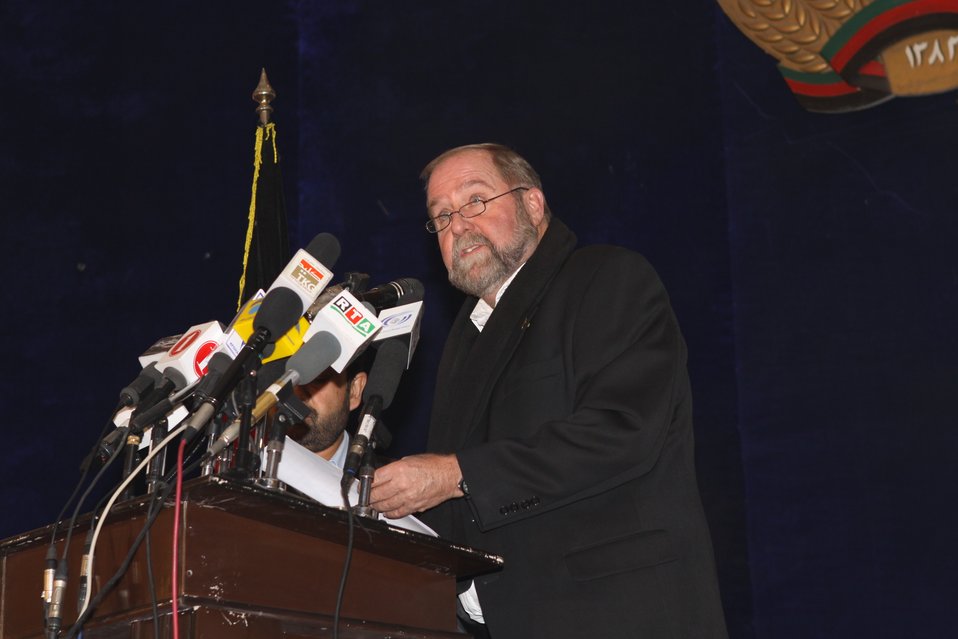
Community Health Workers Celebrated

Kabul, Afghanistan | December 5, 2010 — In support of the United Nations designated International Volunteer Day for Economic and Social Development, Afghanistan’s Ministry of Public Health celebrated its annual Community Health Worker Day today. Acting Minister of Public Health Dr. Suraya Dalil, USAID Senior Deputy Mission Director Robert Hellyer, other government officials, and international donors joined in recognizing the critical contribution of community health workers in Afghanistan and encouraging them to continue their voluntary support to their communities.
The event praised the contributions of the more than 22,000 volunteers throughout the country who deliver community level health-education, counseling, and services out of village health posts located in private homes. The Ministry of Public Health envisioned that community-based healthcare programs will actively encourage communities and families to adopt healthy lifestyles and behaviors, and provide families access to high quality and socially acceptable preventative medicine and life-saving services.
“We have 22,000 community health workers in Afghanistan that are able to implement the basic and standard medicines. They all have been trained through a job description,” said Minister Dalil. Addressing the health workers, she added, “I am proud and feel powerful that I have people like you.”
USAID-funded health projects collaborate closely with the Ministry of Public Health to improve the health and nutritional status of Afghans, provide quality primary healthcare, and promote healthy behaviors at the community and household-levels. USAID supported the training of more than 9,000 of the volunteer community health workers currently working in Afghanistan.
“On behalf of the American people, I congratulate the Community Health Workers for their diligence to gain the skills and knowledge necessary to serve their communities in this important role,” said USAID Senior Deputy Mission Director Hellyer. “USAID strongly supports community based health care and believes that quality community-based health services are essential to reaching Afghanistan’s Millennium Development Goals.”
To support the Basic Package of Health Services, USAID assisted in developing the community health worker training manual, helped train community health worker supervisors and master-trainers, facilitated in-service training, and produced and developed reporting tools, job aids, and education materials.